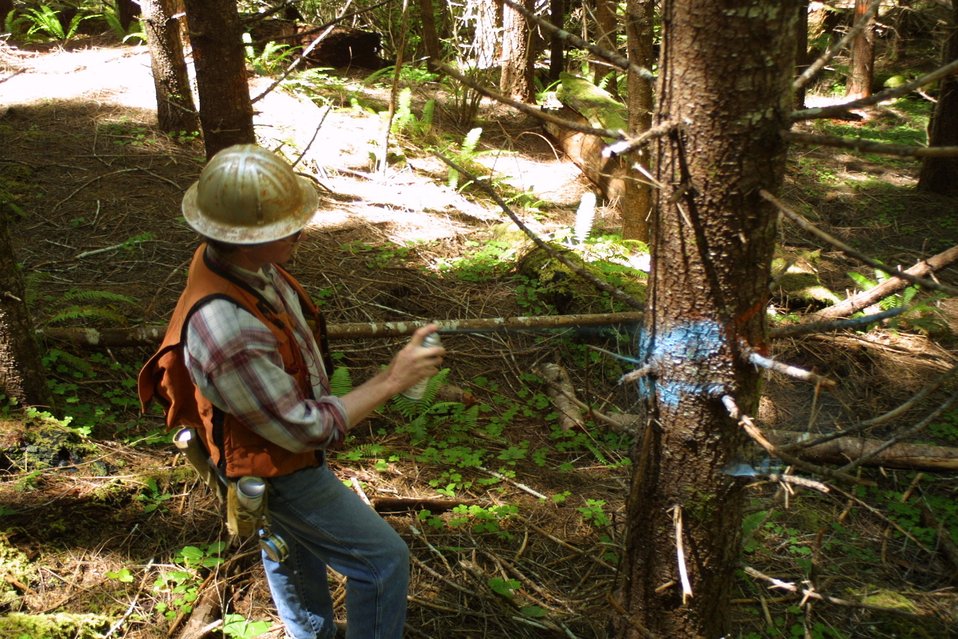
Camas East Timber Sale in Late Successional Reserve.